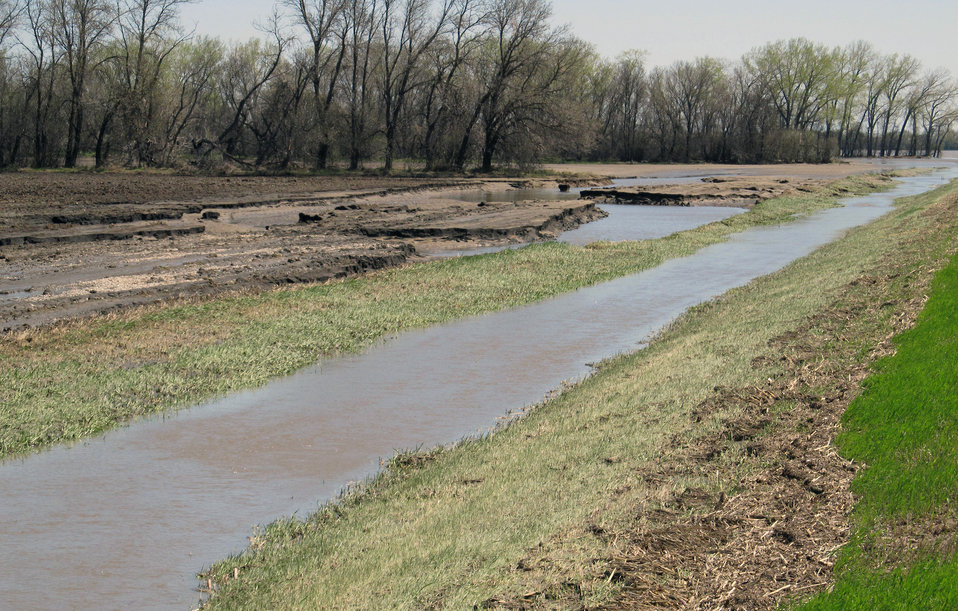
Flooding and water damage in the Park and Tongue River Watersheds located in Cavalier, Pembina and Cavalaier Counties in ND on Thursday, May 23, 2013.